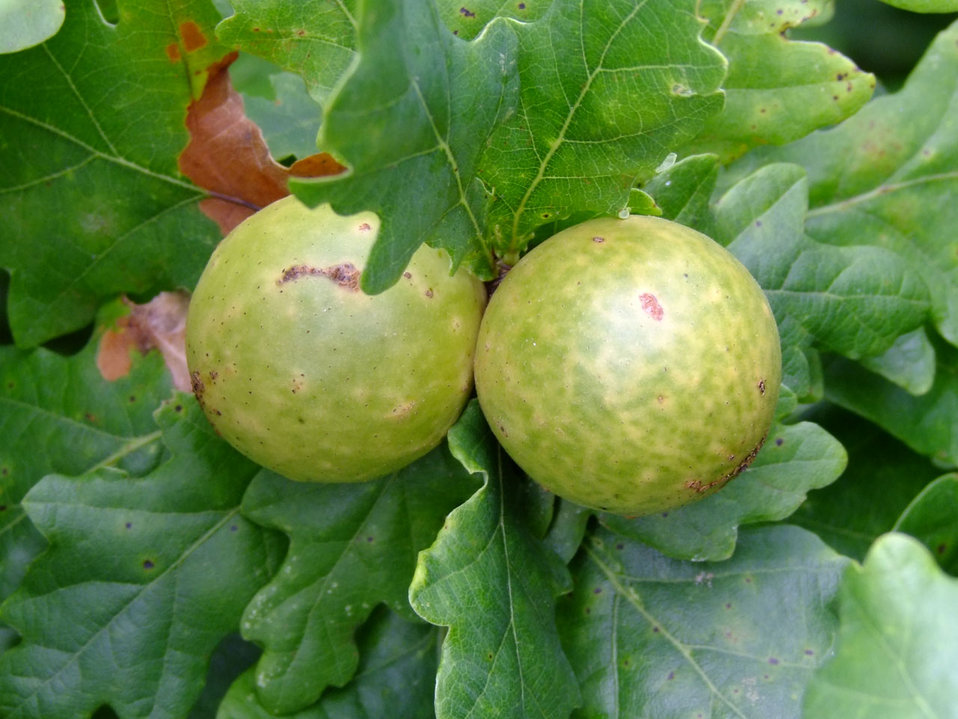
Oak tree leaves

One can find them on oak tree, there are eggs in it.